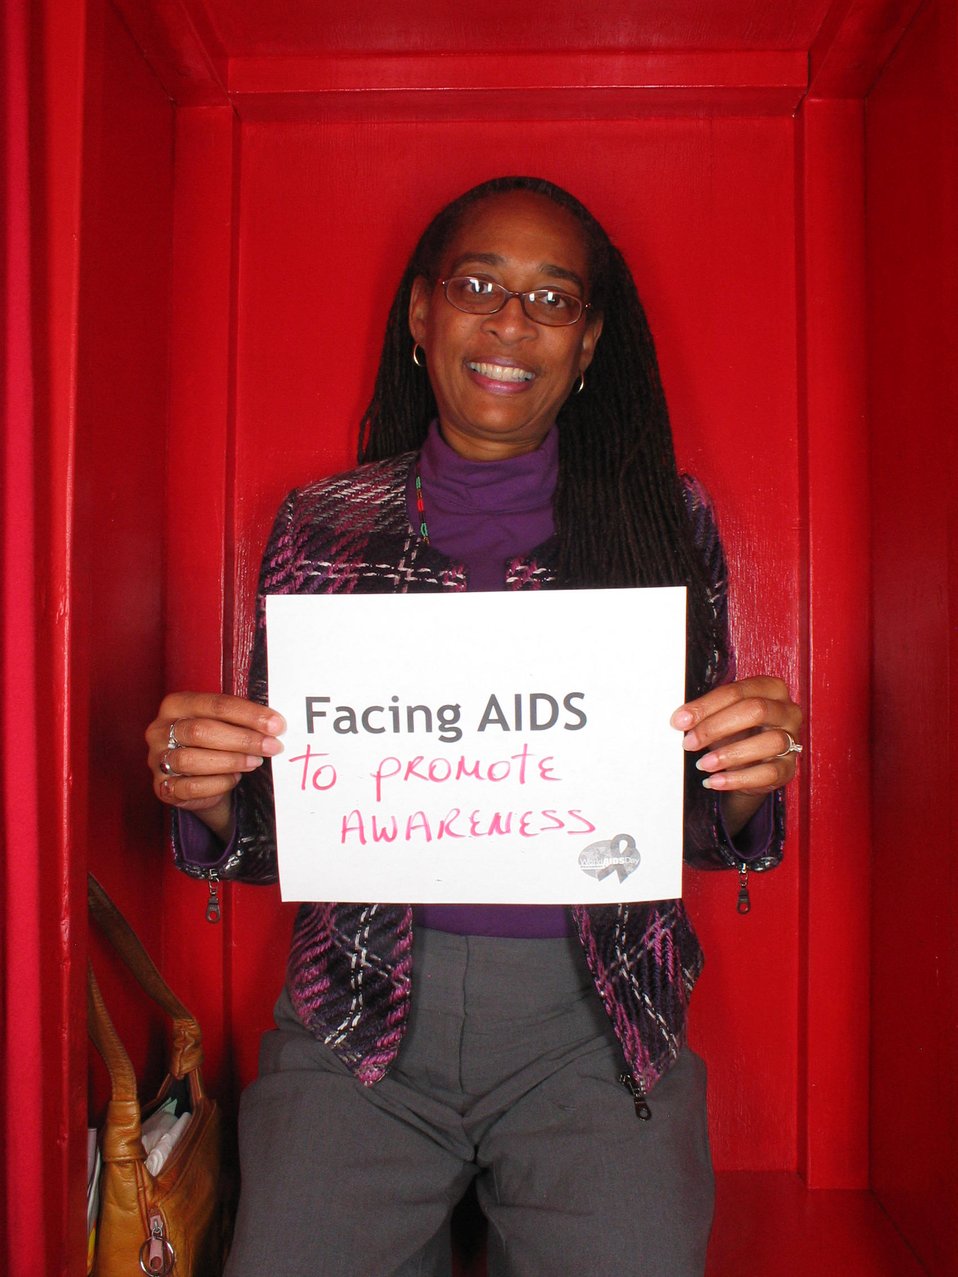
Facing AIDS to promote awareness